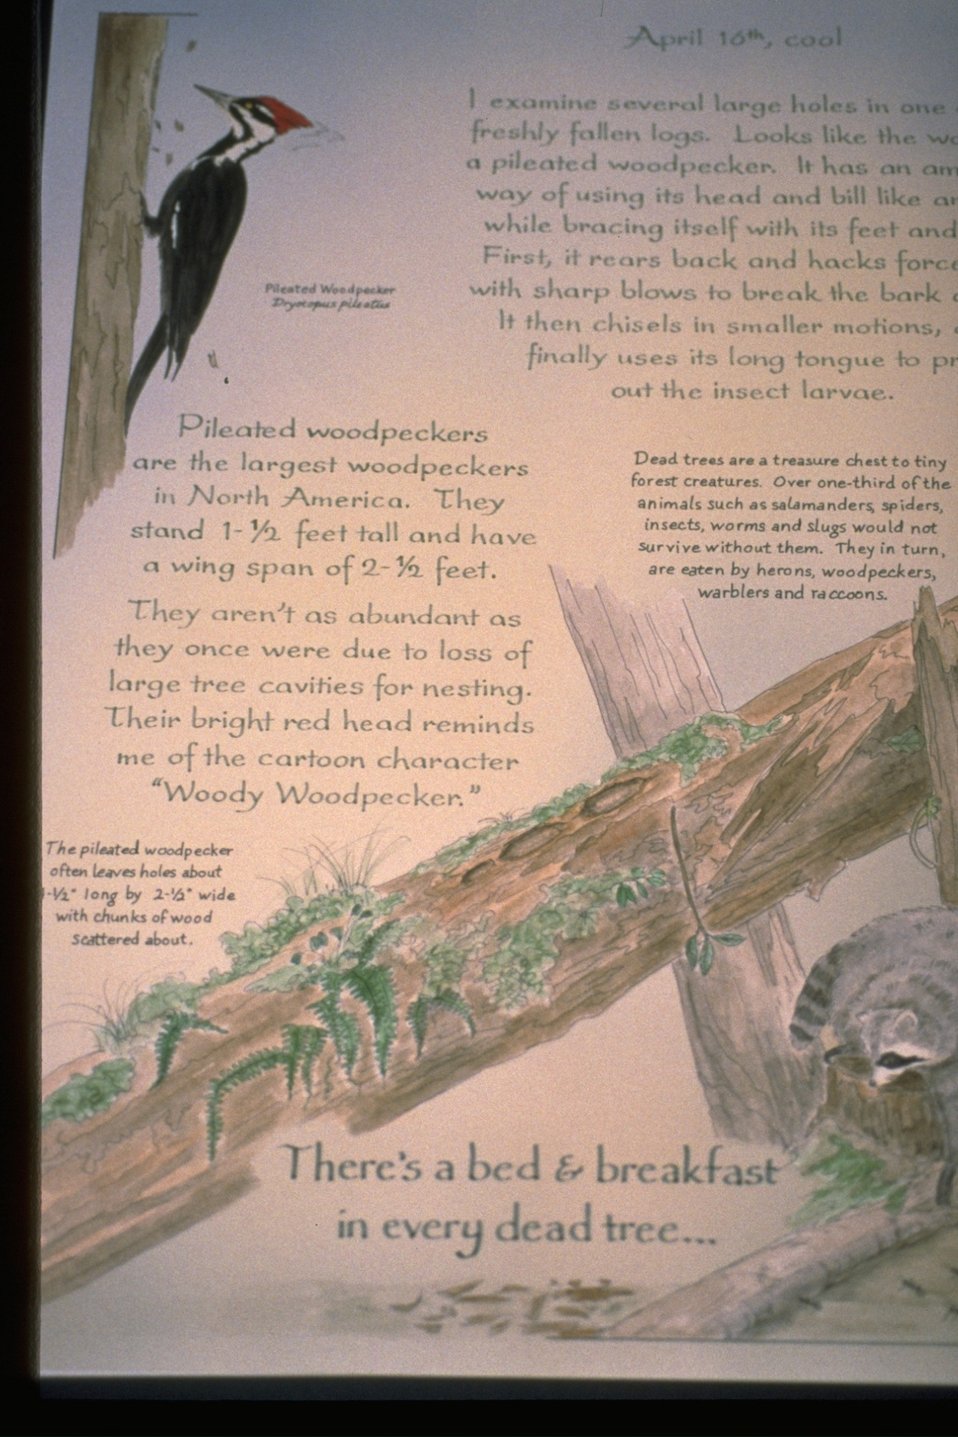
Interpretive Panels: Boardwalk Trail Journals.